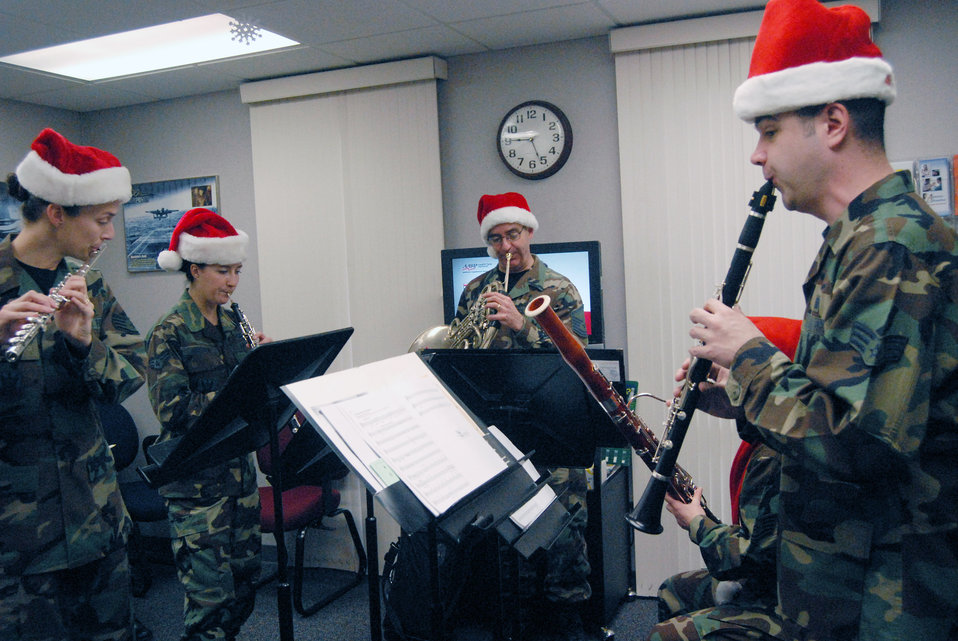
Langley Winds spread holiday cheer

Airmen from the Langley Winds, Heritage of America Band, perform for Airmen Dec.13 at Pope Air Force Base, N.C. The band from Langley AFB, Va., came to the base to bring holiday cheer to the Airmen.